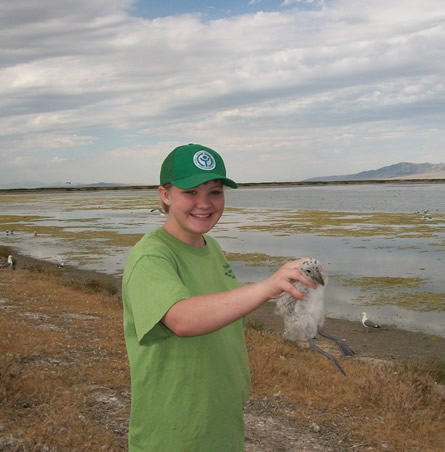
YCC member holds a chick to be banded

Youth Conservation Corps assisted Weber State University professor, John Cavitt, and his students with research on many birds at Bear River Migratory Bird Refuge. The YCC looked for nests, banded chicks and assisted with vegetation collection.